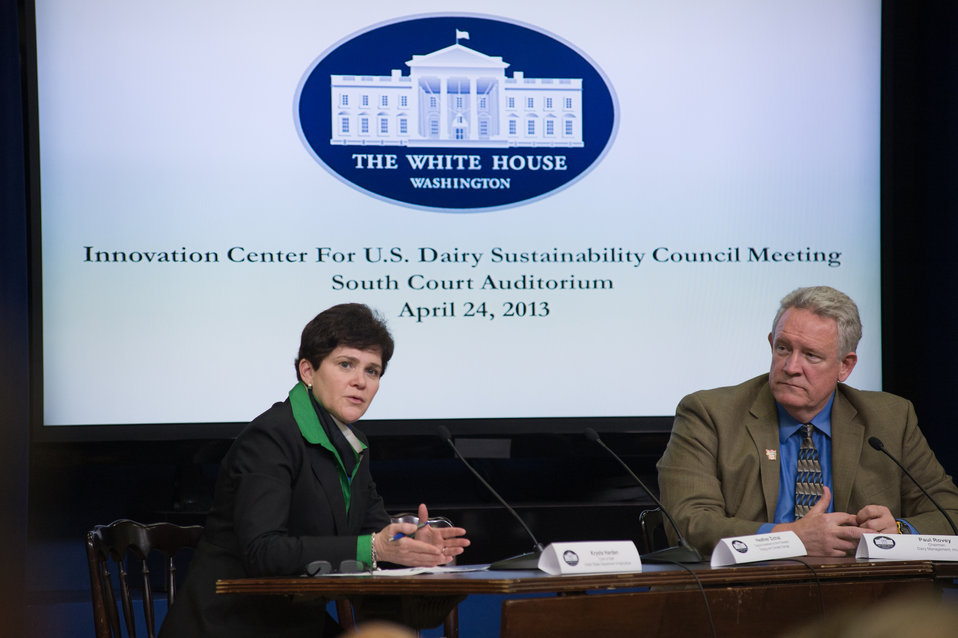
Agriculture Chief of Staff Krysta Harden speaks at the Innovation Center For U.S. Dairy Sustainability Council Meeting on Wednesday, Apr. 24, 2013, at the White House, in Washington, D.C.